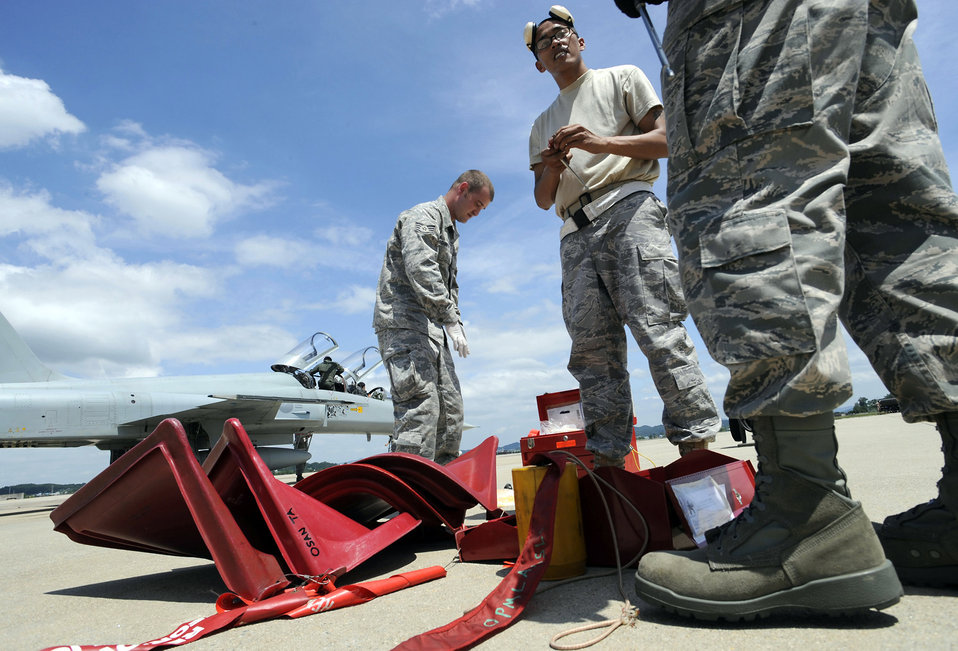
Osan cross-servicing program fosters good relations

Maintenance and weapons Airmen from the 51st Fighter Wing prepare to service two F-5 Tiger IIs Aug. 10 at Osan Air Base, South Korea. They are servicing the F-5s as part of the Osan AB combat cross-servicing program. The program is a mutual agreement between the U.S. and South Korean air forces that allows the maintainers from both services to get hands-on experience working on each other's aircraft.